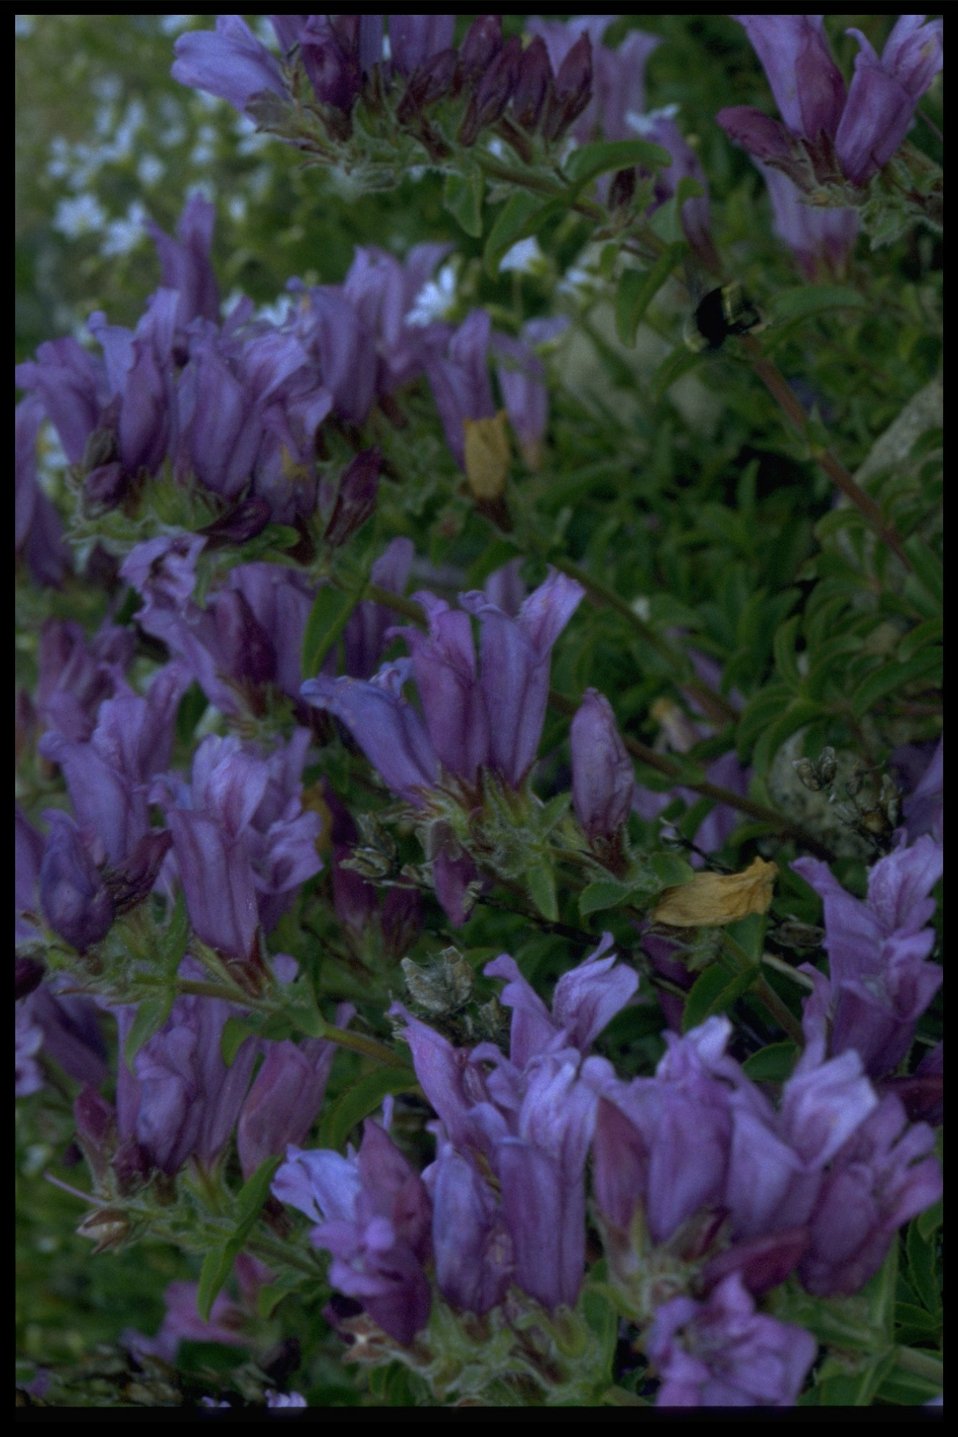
Medium shot of wildflowers (genus Penstemon).